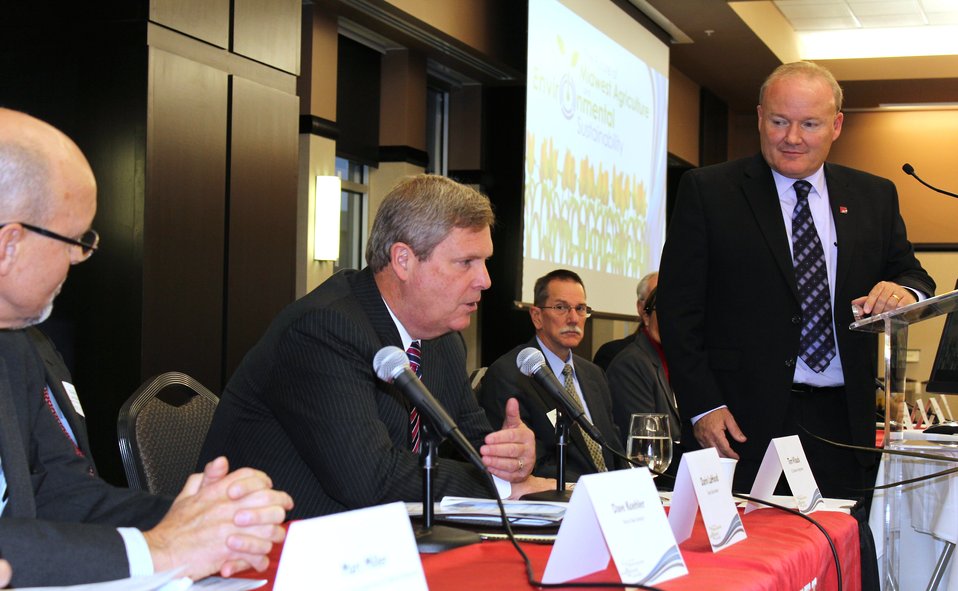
Secretary Vilsak answers questions from panel ofdistinguished guests asBrad McMillan of BradleyUniversity moderates session, at the Future of Midwest Agriculture and Environmental Sustainability symposium on Thursday, Nov. 3, 2011, at Bradley University in Peoria, IL.